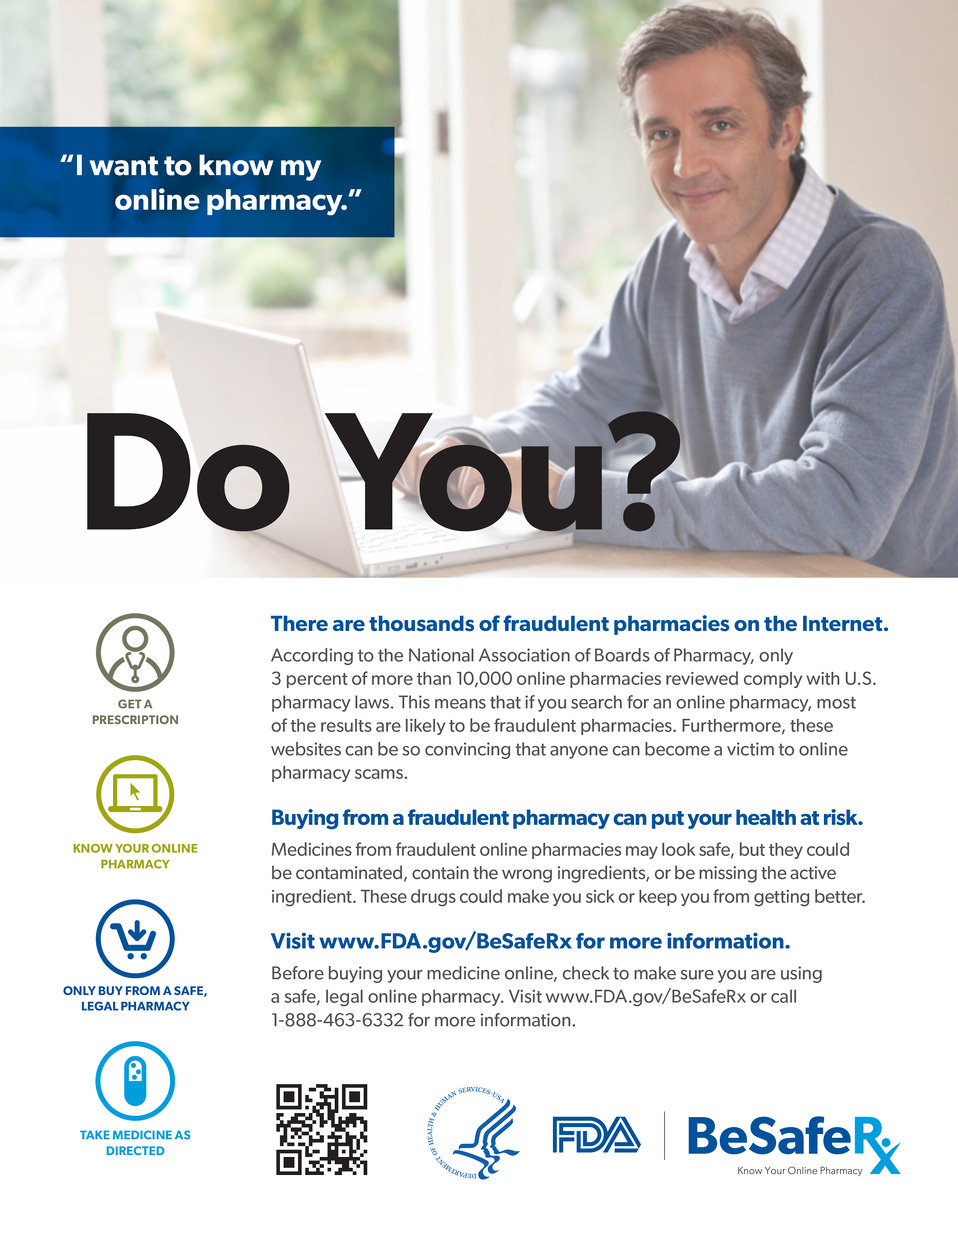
BeSafeRx Consumer Fact Sheet

A high quality PDF of this public service announcement is available at: BeSafeRx Campaign Materials

This is your one-stop resource for all materials associated with the FDA BeSafeRx campaign. FDA developed these materials to educate consumers about the risks associated with fake online pharmacies and how to safely purchase prescription medicine online. Put them to work for you!